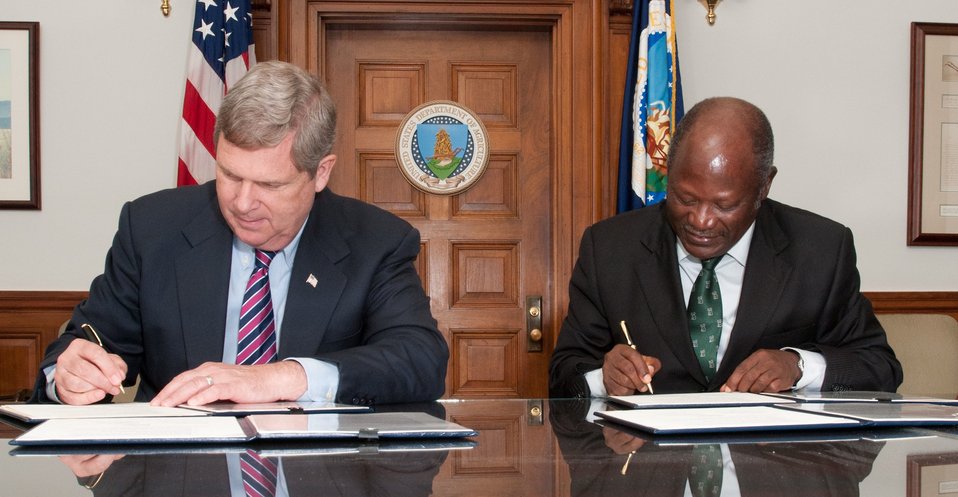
U.S. Department of Agriculture Secretary Tom Vilsack (left) and Alliance for a Green Revolution in Africa (AGRA) President Dr. Namanga Ngongi (right) sign a Memorandum of Understanding in Secretary Vilsack???s office in Washington, DC, on Thursday, May 26, 2011. AGRA???s programs integrate seeds, soils, market access, policy and partnerships and innovative finance. The alliance strives for comprehensive changes across Africa???s agricultural system.???? Programs also support agricultural education and water management, and the involvement and training of youth.??USDA Photo by Lance Cheung.